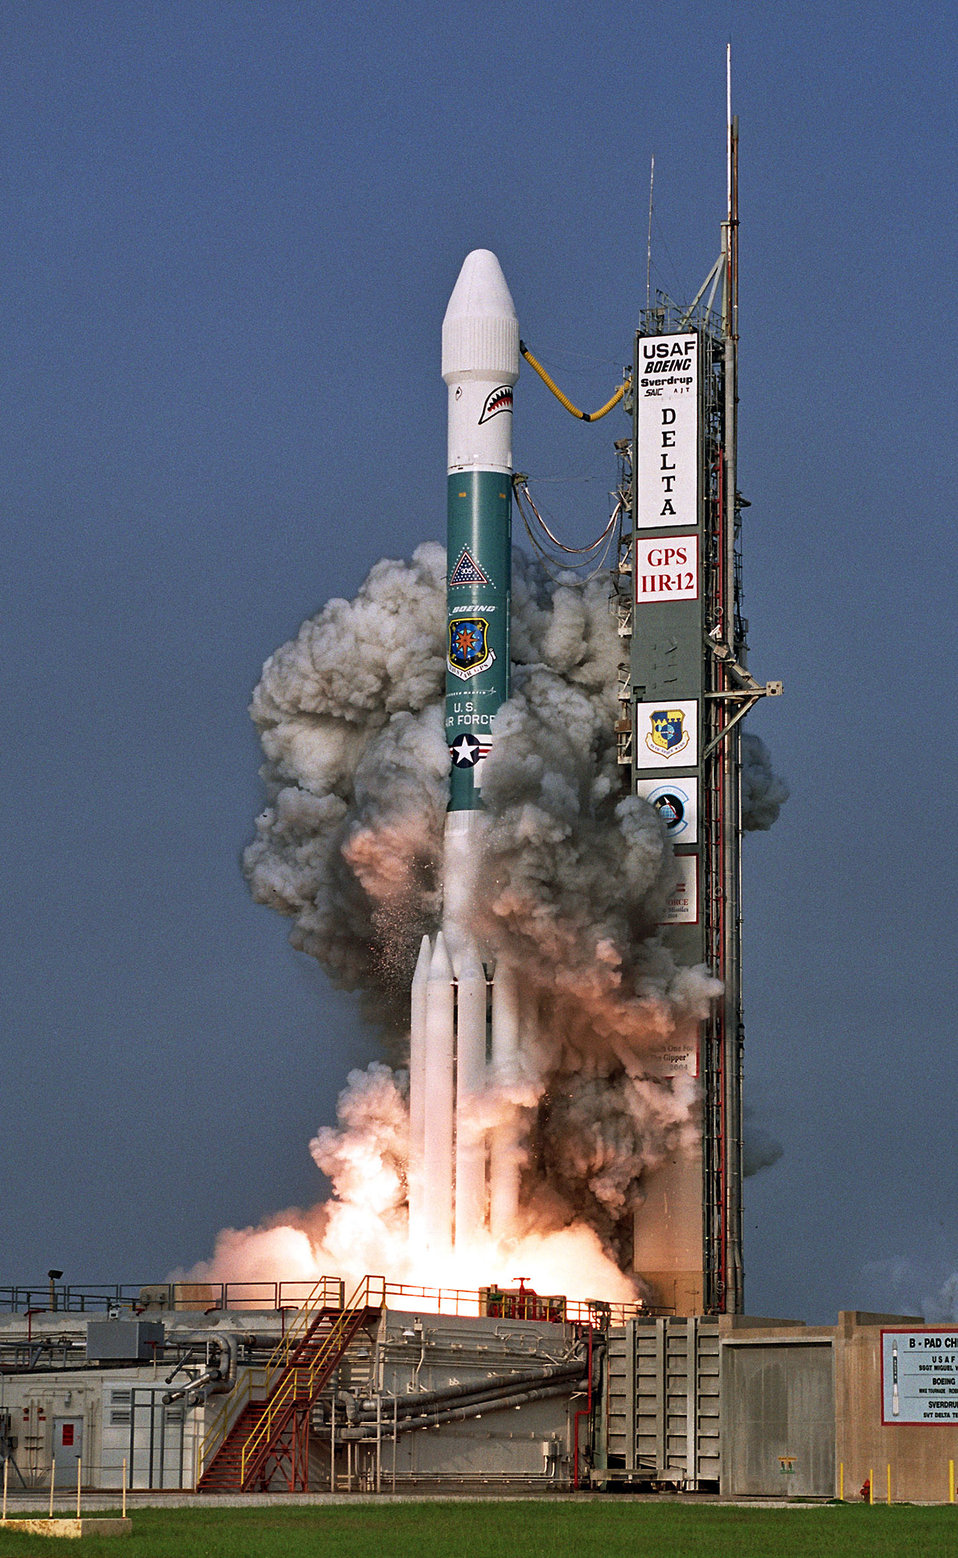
Rocket carries GPS satellite into orbit

CAPE CANAVERAL AIR FORCE STATION, Fla. -- A Boeing Delta II rocket lifts off from here June 23 carrying a replacement satellite for the Air Force's Global Positioning System into orbit. The Delta II is a three-stage launch vehicle.